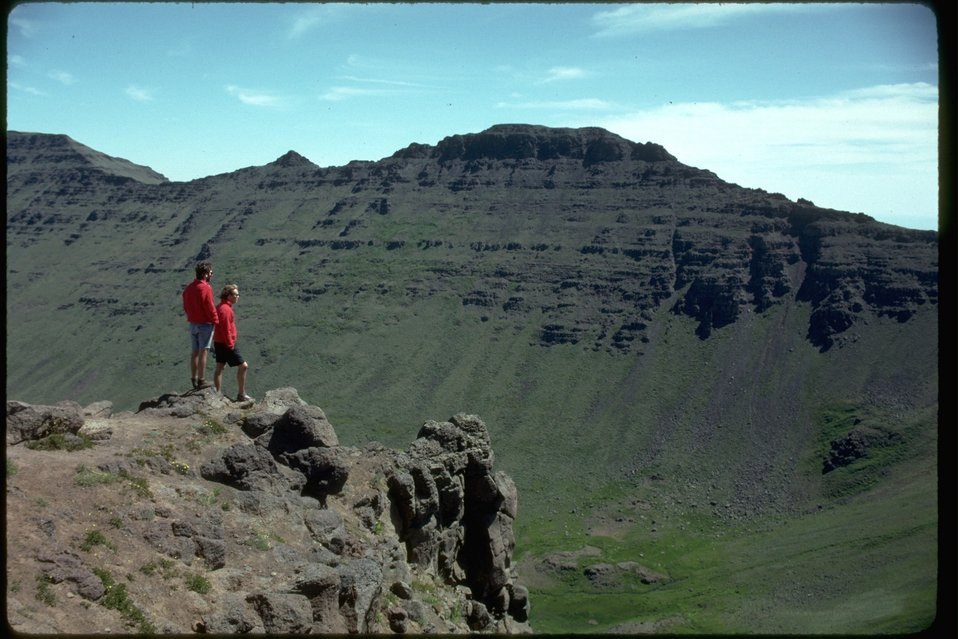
Sightseeing in Kiger Gorge at Steens Mountain in Southeastern Oregon.